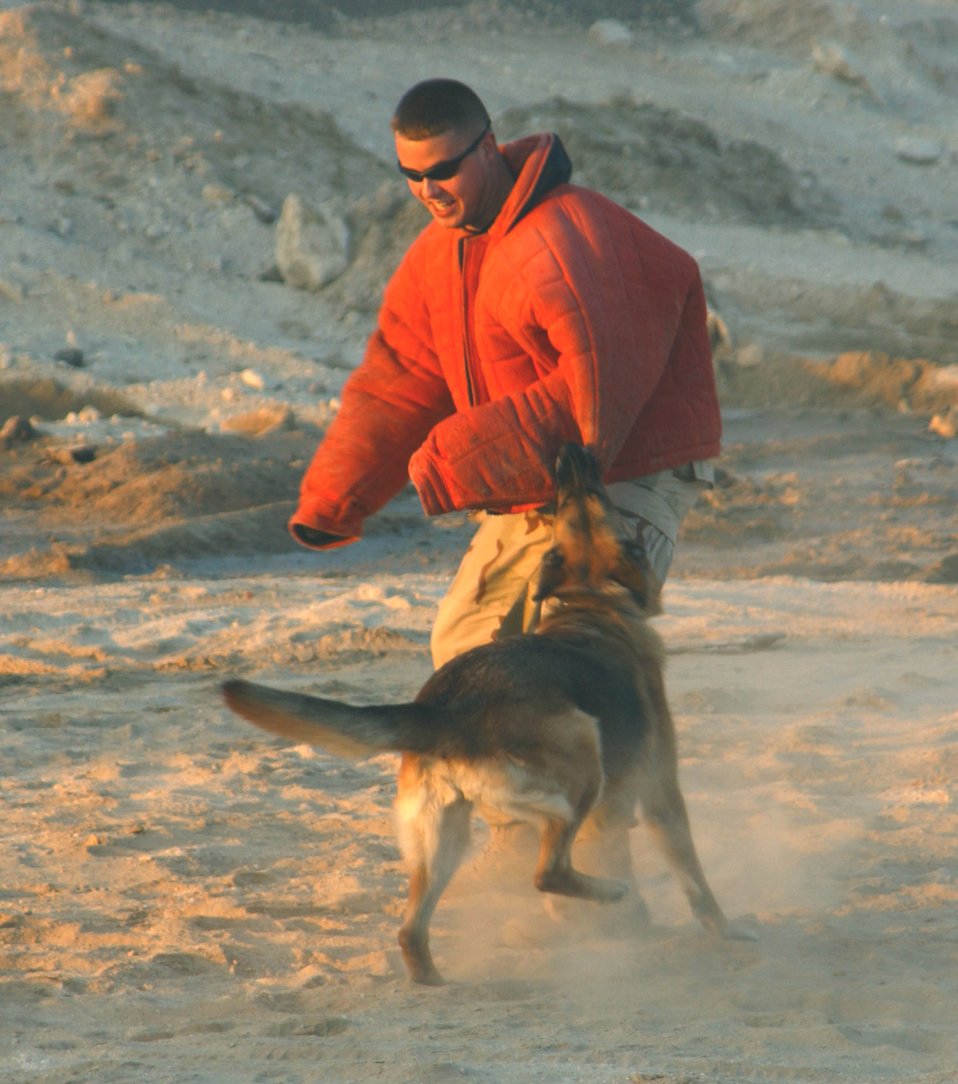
Stand perfectly still...

Wearing a red